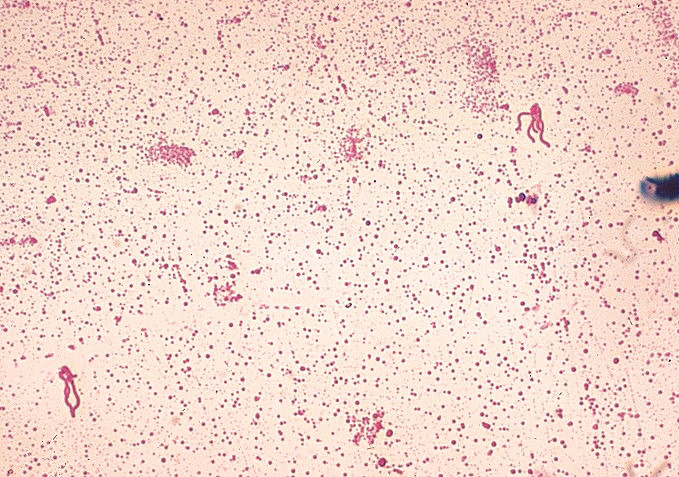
Alcaligenes denitrificans. Flagella stain.